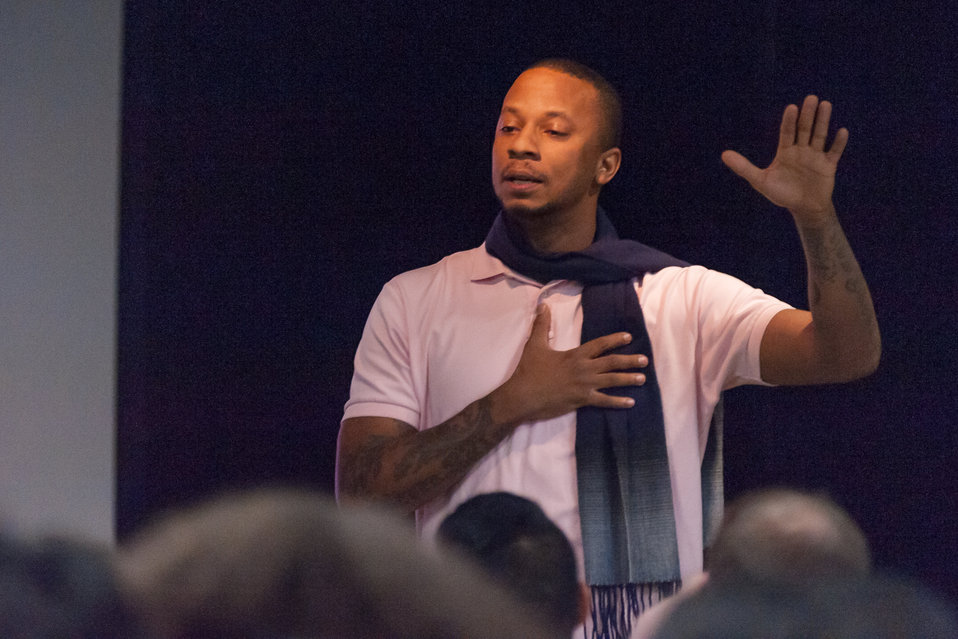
Mentor NDFW Event 2014

Mentor Foundation USA, in partnership with the National Institute on Drug Abuse (NIDA) and other key partners hosted a Youth Drug Facts Rally at the House of Sweden on Thursday, 30th January 2014. Approximately 200 students from five local high schools attended and had the opportunity to interact with top U.S. scientific experts, and inspiring guest speakers to “shatter the myths” about drugs and substance abuse, while pledging to stay drug-free.